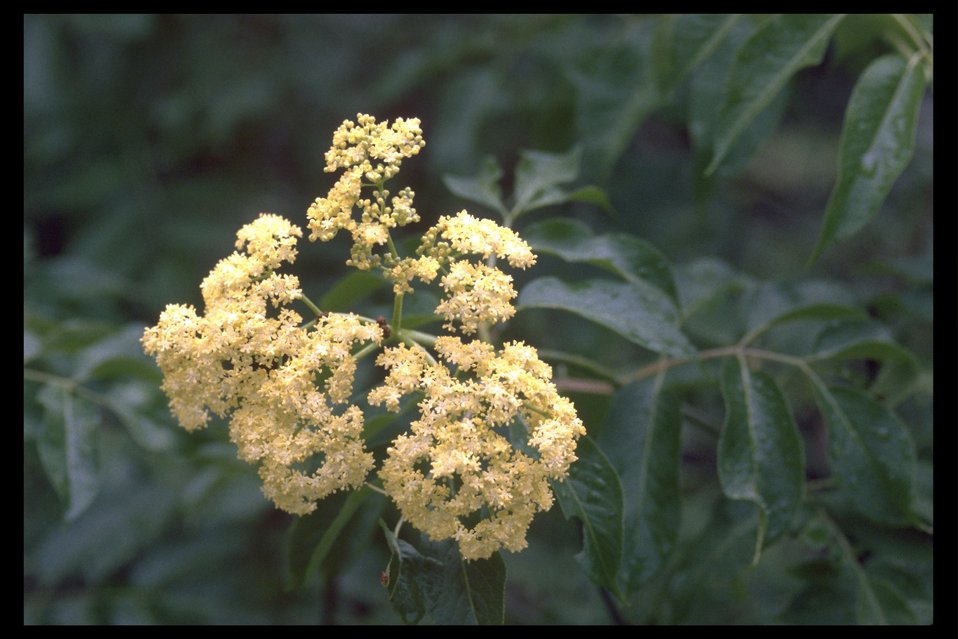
Close up of Red Elderberry (Sambucus racemosa) at Upper Trail Creek.